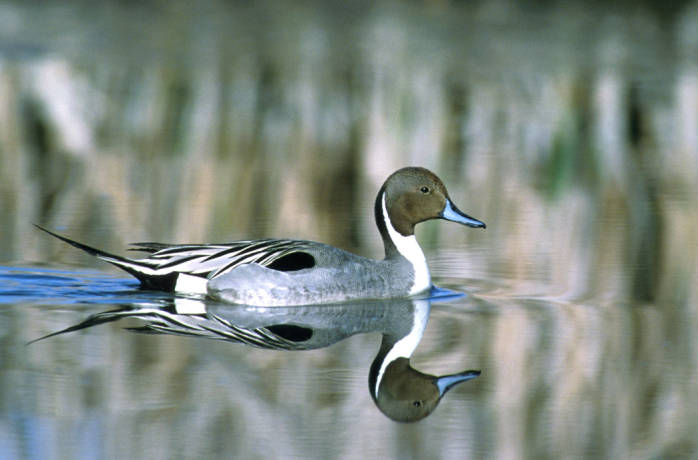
Northern pintail

Klamath National Wildlife Refuge Complex, CA-OR